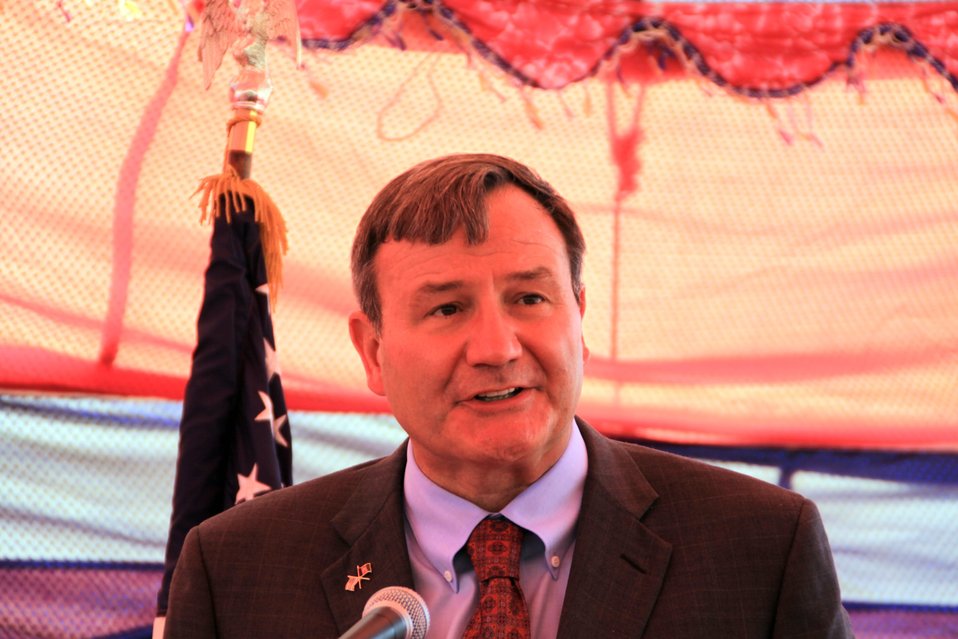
Badam Bagh Farm